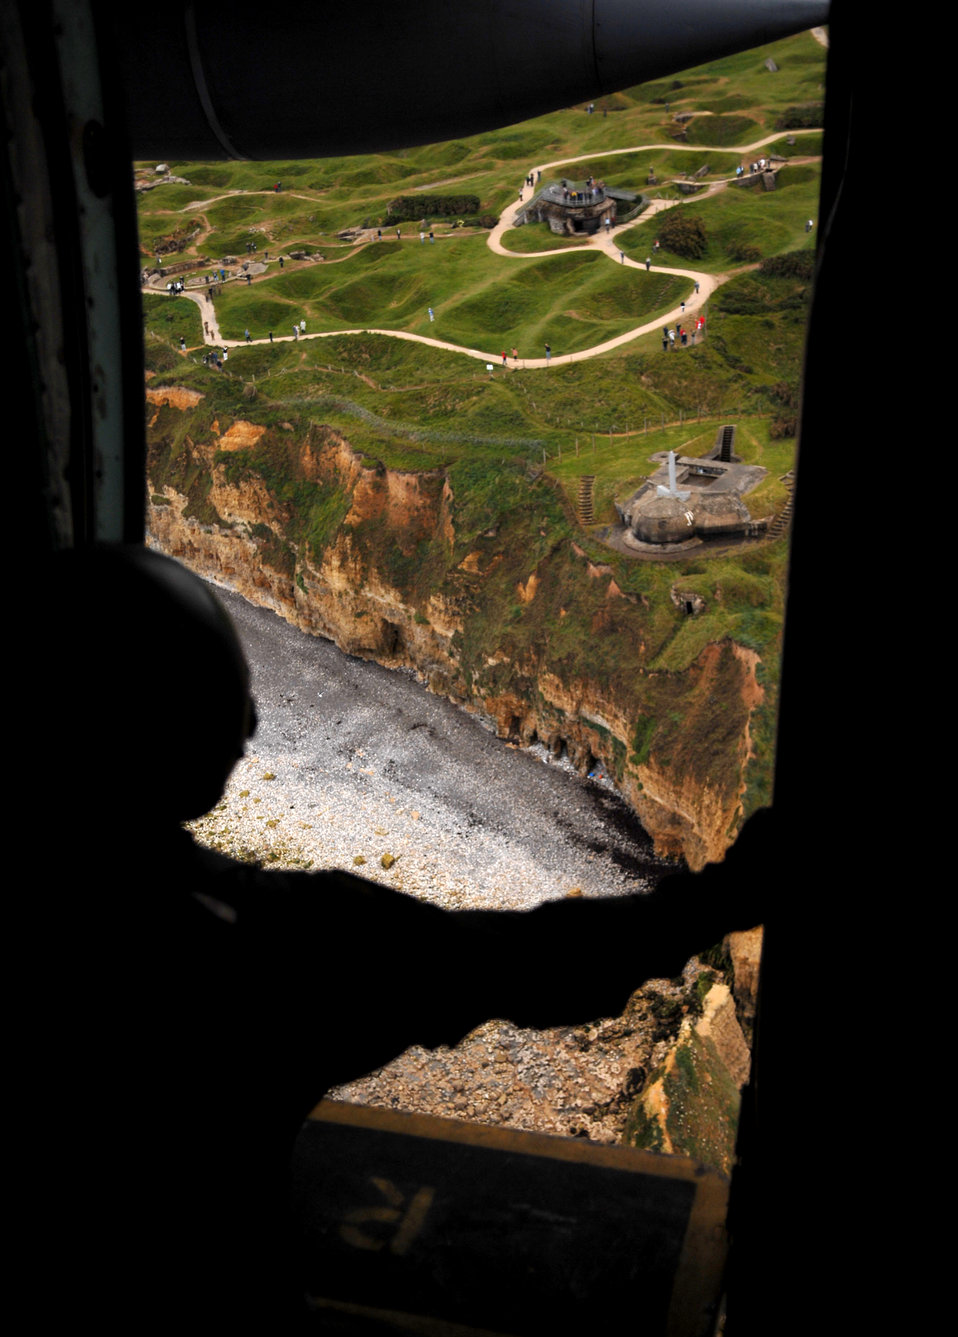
Historic view

Staff Sgt. Kepa Kahihikolo looks down to Pointe du Hoc, France, as French spectators wave goodbye to the C-130 Hercules crew June 6 during the 65th Anniversary of D-Day remembrance ceremony. More than 300 Army paratroopers jumped from a C-130 over the beaches of Normandy this year. The C-130 is from Ramstein Air Base, Germany. Sergeant Kahihikolo is a C-130 loadmaster.